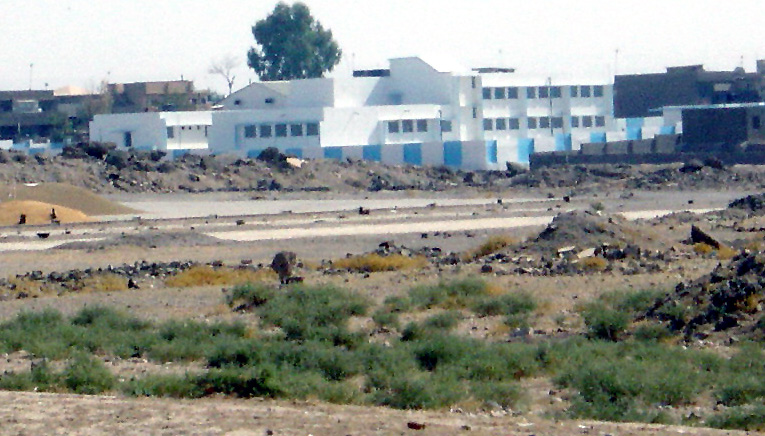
Army, Air Force team up

KIRKUK, Iraq (AFPN) -- Army and Air Force volunteers teamed up to fully renovate an Iraqi school here before the new school year begins Oct. 1.